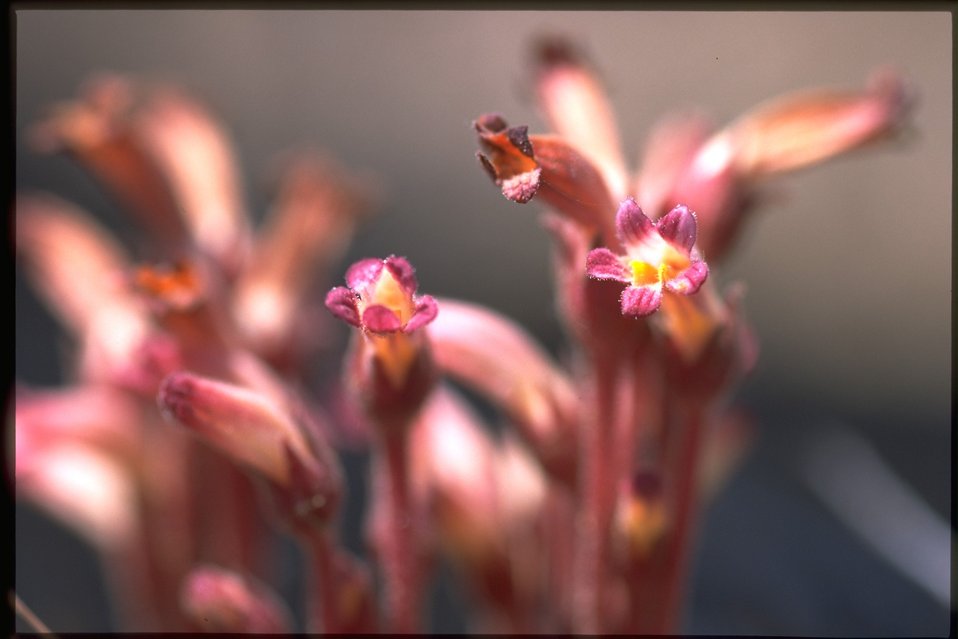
Closeup shot of Orobanche.